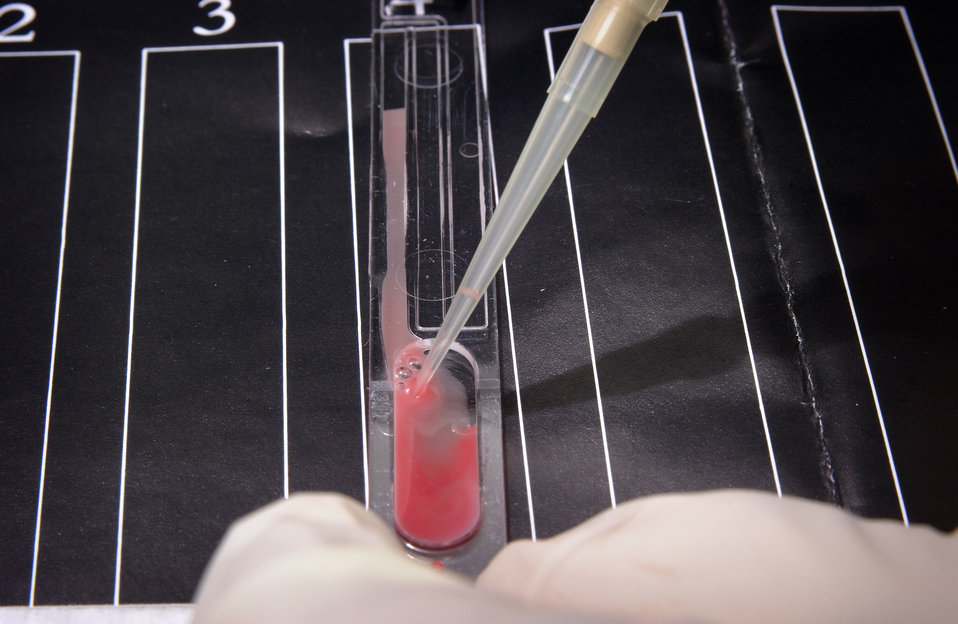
At this point in the CAPILLUS� HIV-1/HIV-2 Rapid Test the mixture is coaxed into the capillary channel. (Step 10 of 12)